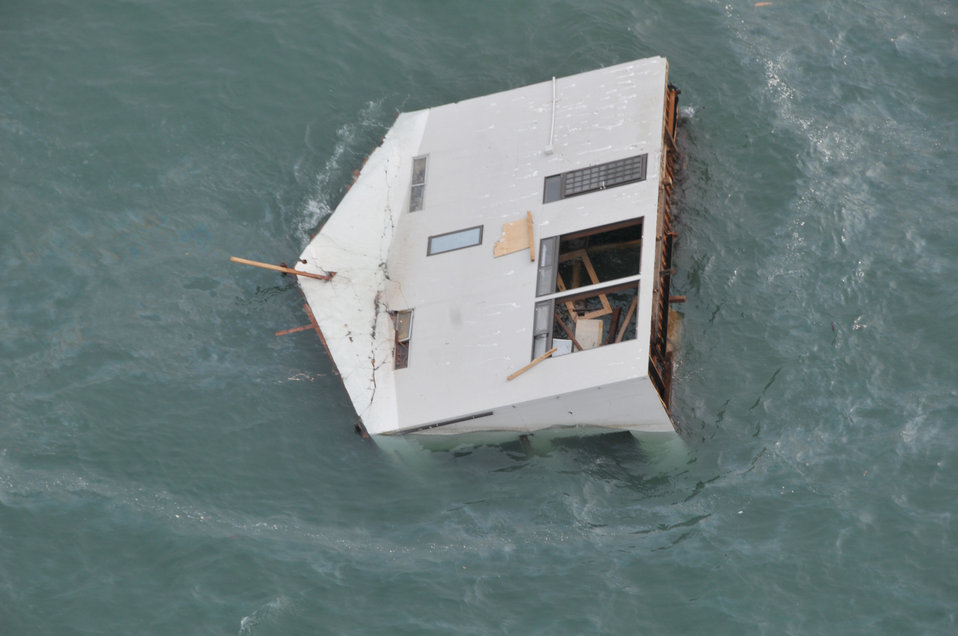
Airmen perform search and rescue

SENDAI, Japan -- U.S. Air Force search and rescue personnel witness a house adrift off the coast of Northeastern Japan March 14. The HH-60G helicopter crew surveyed the damage stricken area as part of Japan's earthquake and tsunami recovery efforts.